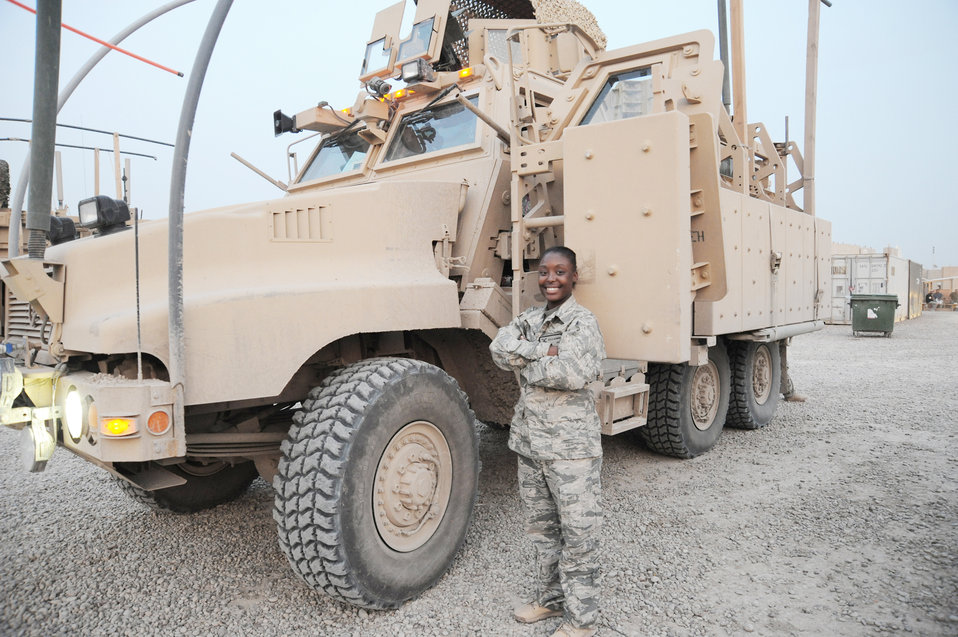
Airman gives new touch to war machine

Senior Airman Kayla Manning stands in front of her mine-resistant, ambush-protected vehicle after returning from a mission April 4, 2010, at Camp Stryker, Iraq. Airman Manning is from the 732nd Expeditionary Security Forces Squadron, Det. 2.